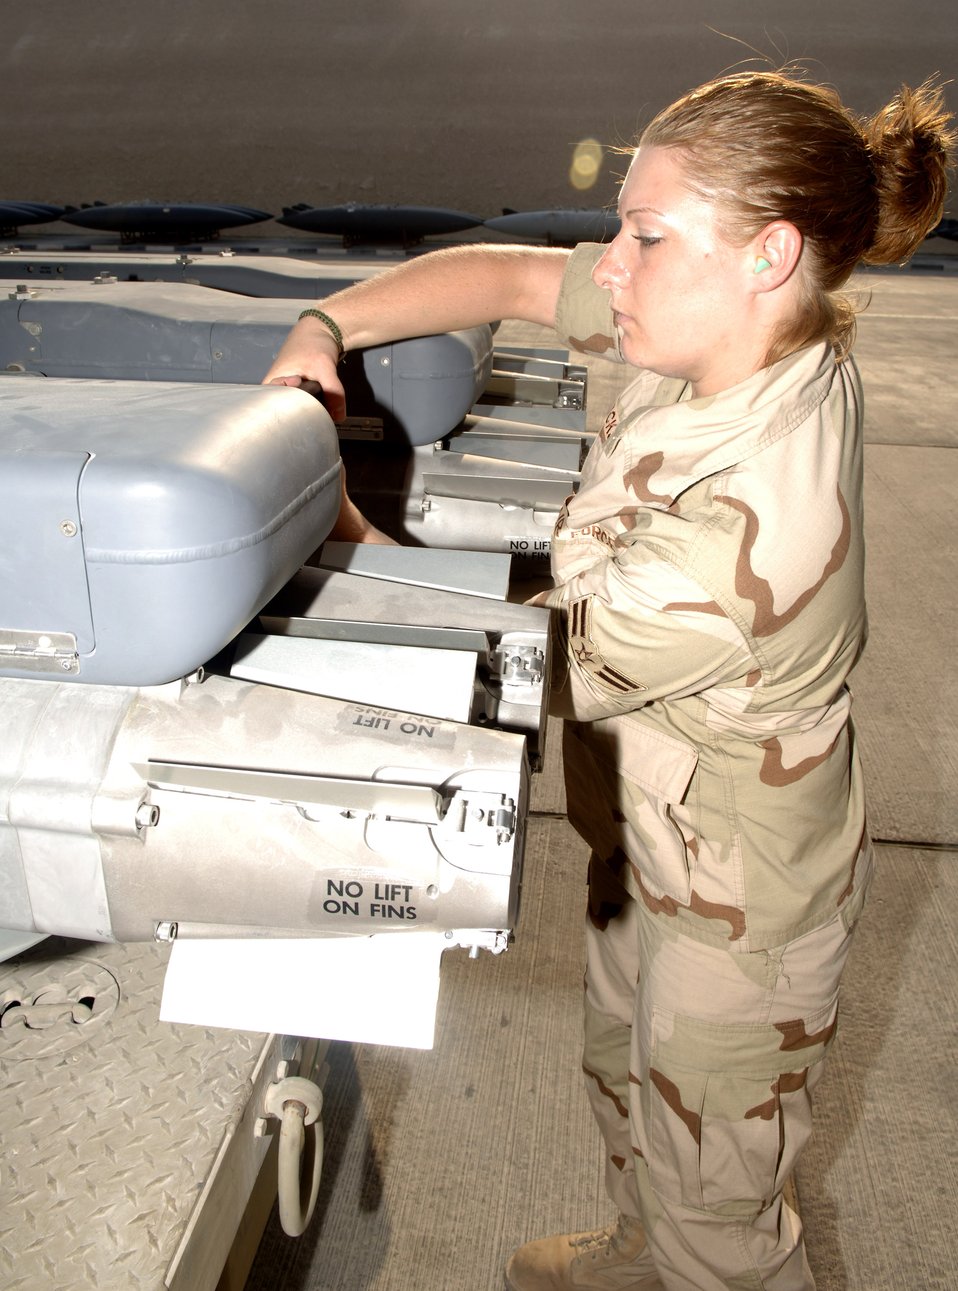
Small diameter bomb makes combat debut

Airman 1st Class Amanda Hicks prepares a weapons carriage with GBU-39/B small diameter bombs to be uploaded on an F-15E Strike Eagle. Airman Hicks is assigned to the 379th Expeditionary Aircraft Maintenance Squadron and is deployed from Royal Air Force Lakenheath, England.